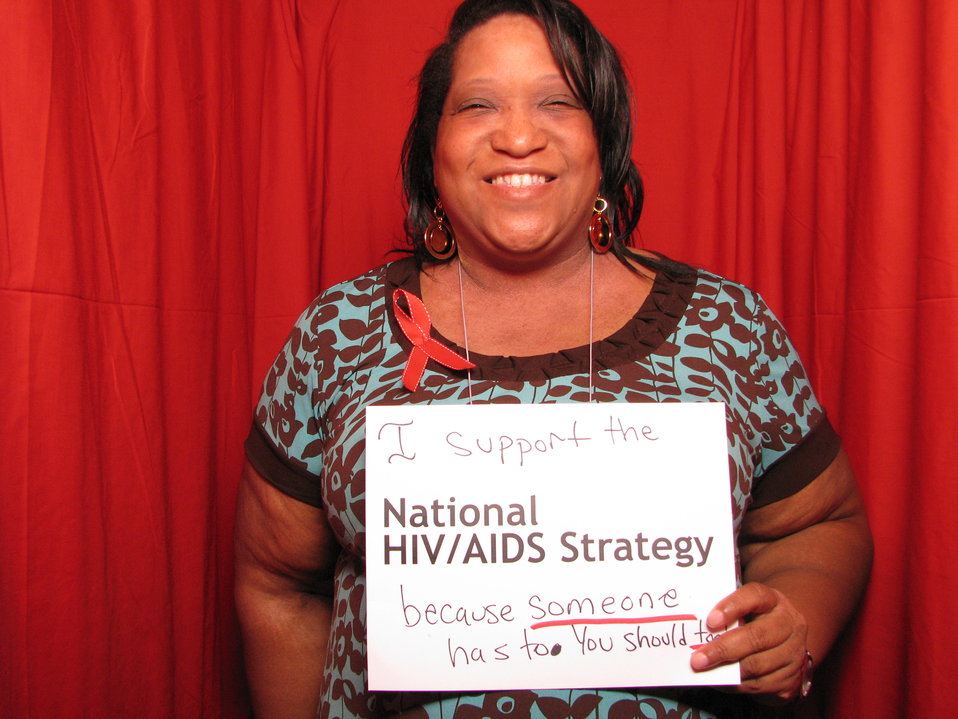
I support the National HIV/AIDS Strategy because someone has to. You should too!

From the AIDS.gov photo booth at the U.S. Conference on AIDS, September 2010 (Orlando, FL).